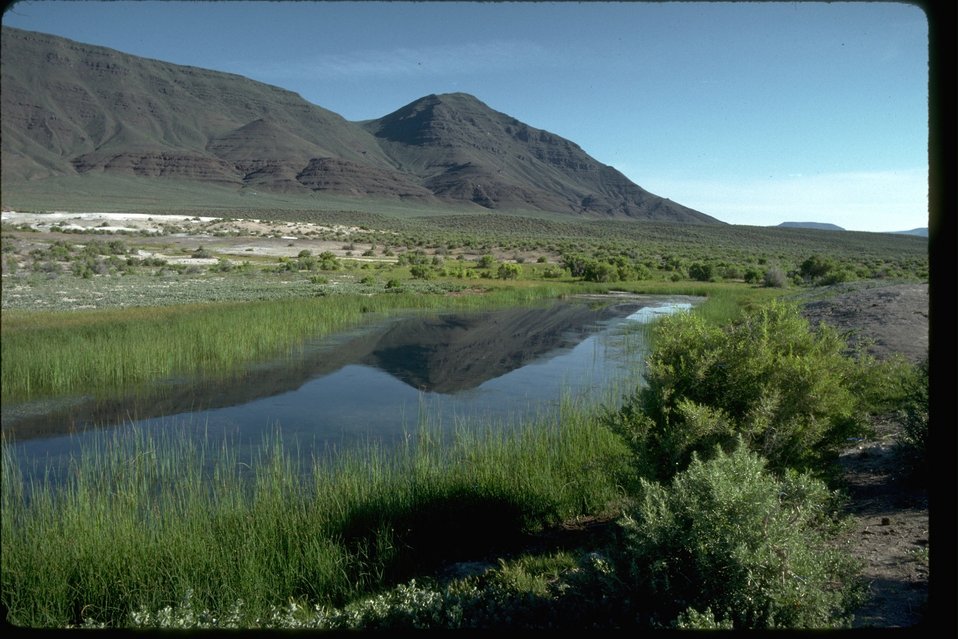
Mickey Butte reflected in Stock Pond in the Alvord Desert Area in Southeast Oregon.